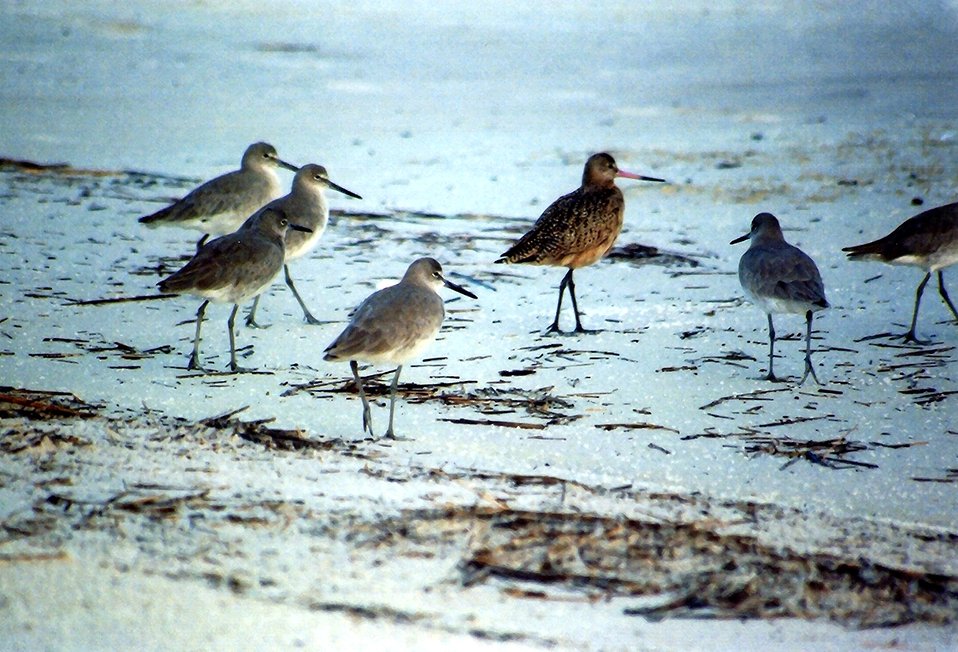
Sandpipers patrolling the beach.